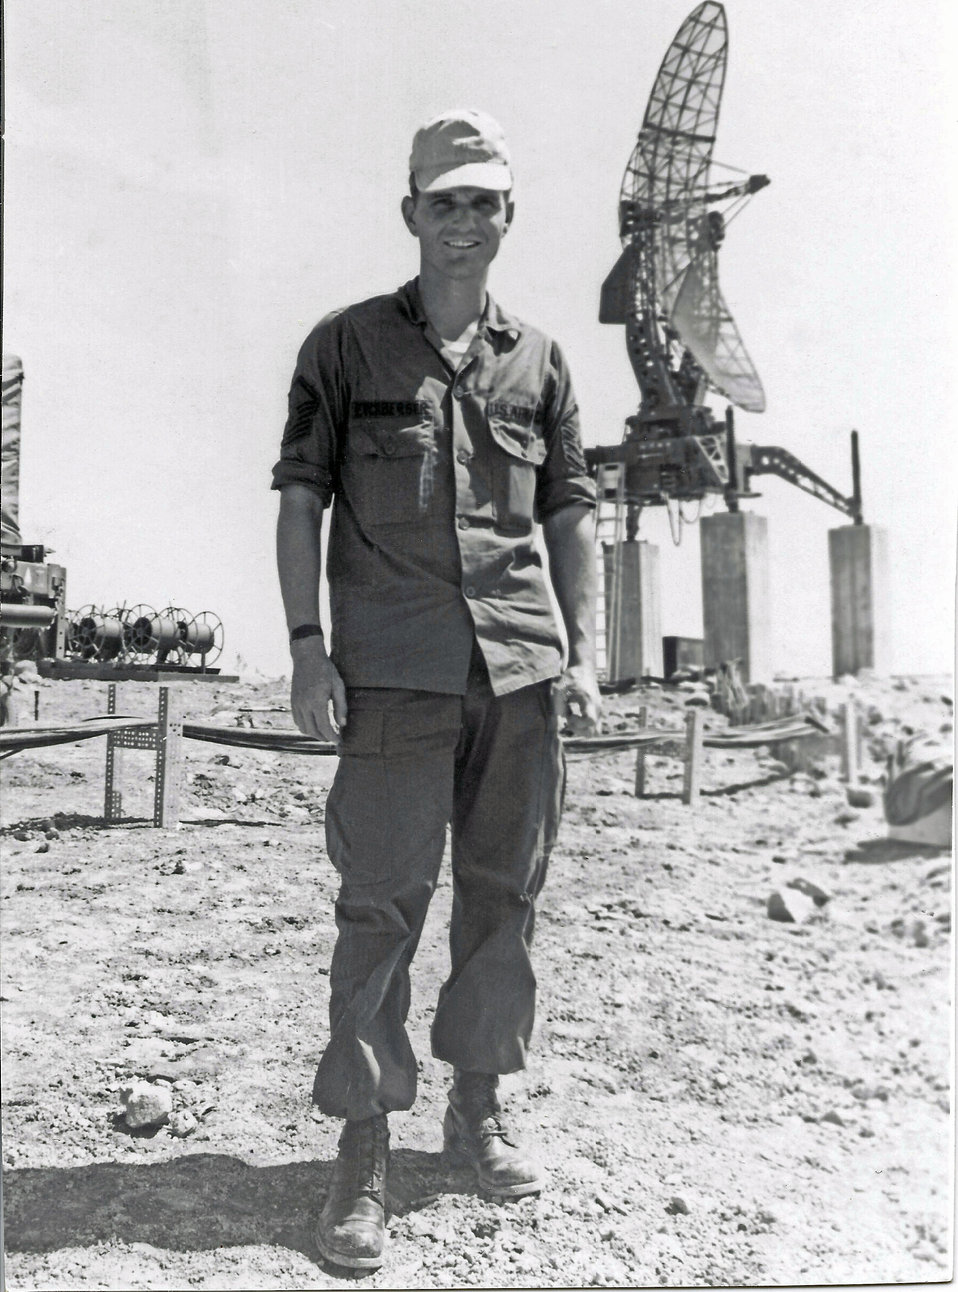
Airman to receive Medal of Honor for '68 actions

Chief Master Sgt. Richard L.